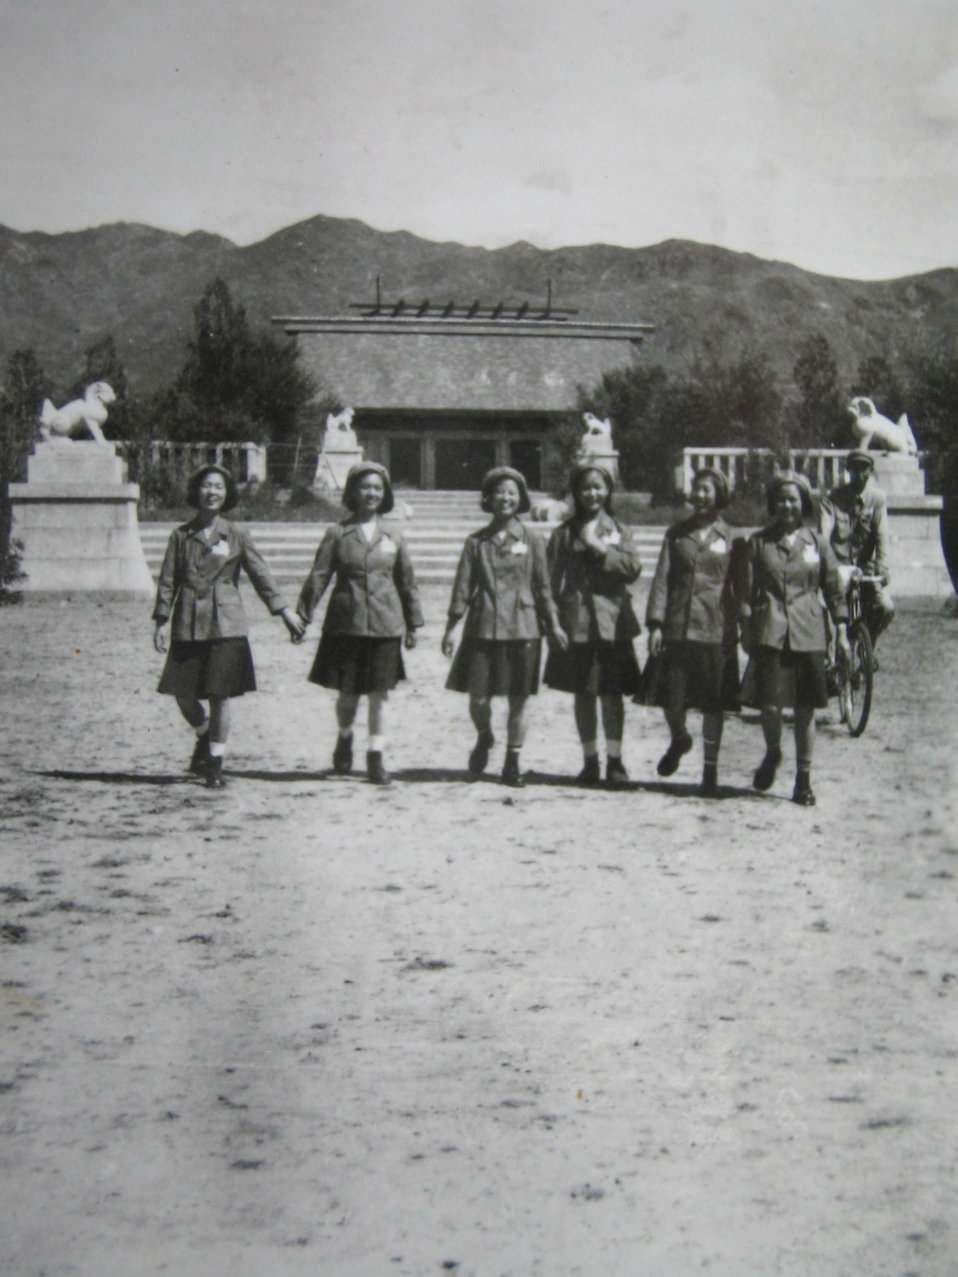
This is an old picture photographed by a unit of the garrison in Zhangjiakou on 1950s. 中文: 这是一幅拍摄于中华人民共和国河北省张家口市胜利公园的图片